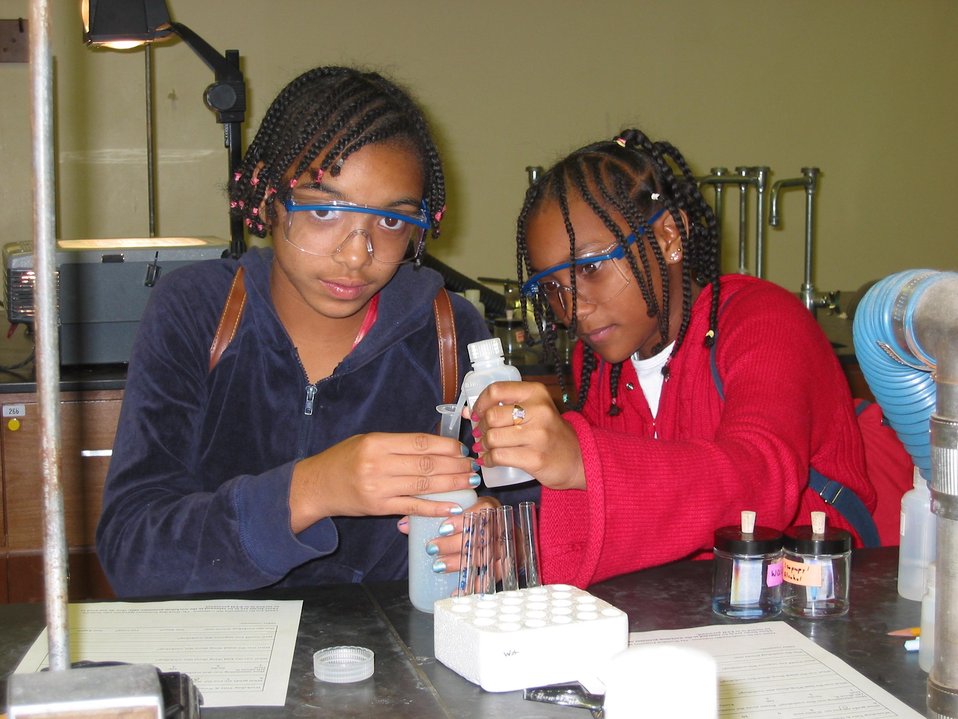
STUDENTS, ATTENDING 12TH ANNUAL JOAQUIN COUNTY EXPANDING YOUR HORIZONS IN MATH AND SCIENCE CONFERENCE ANALYZE SAMPLES IN CHEMISTRY LAB.

LAWRENCE LIVERMORE AND SANDIA NATIONAL LABORATORIES AND THE UNIVERSITY OF THE PACIFIC, SCHOOL OF ENGINEERING AND COMPUTER SCIENCE SPONSOR THE CONFERENCE TO EXPAND THE HORIZONS OF YOUNG WOMEN. MORE THAN 300 STUDENTS, GRADES 6-12, MET ON THE STOCKTON, CA CAMPUS FOR CAREER EXPLORATION WORKSHOPS COVERING BIOLOGY AND DNA TO ROBOTICS AND CHEMISTRY, FOCUSING ON CAREERS IN SCIENCE AND MATHEMATICS FOR WOMEN.